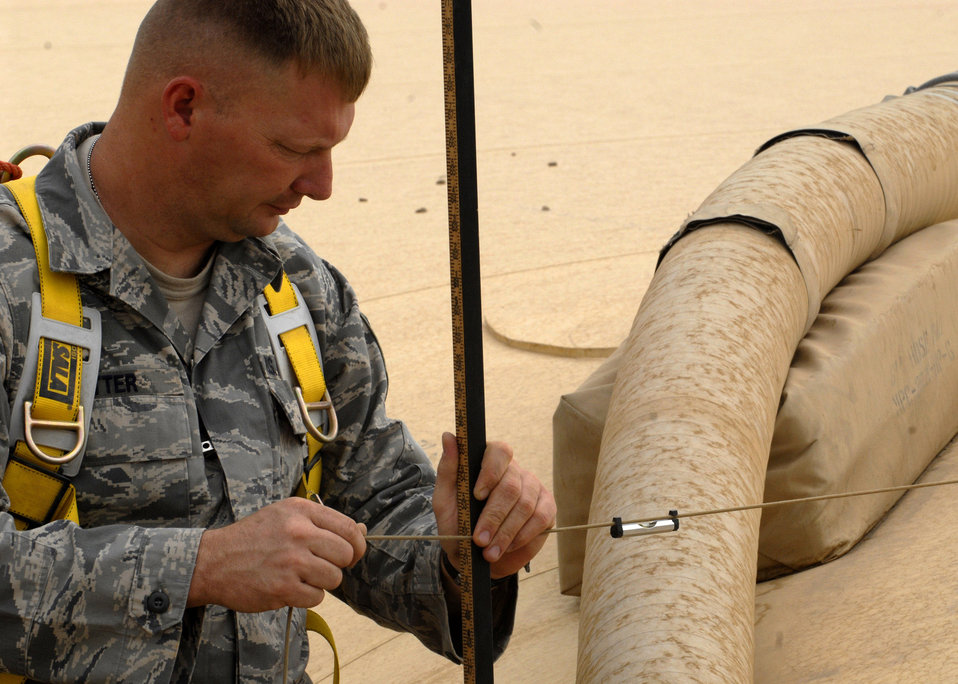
Fuel gauge

Tech. Sgt. Joseph Ritter measures the amount of fuel in a storage cell to monitor the fuel inventory Oct. 17 at Balad Air Base, Iraq. Sergeant Ritter is assigned to the 332nd Expeditionary Logistics Readiness Squadron. He is deployed from Little Rock Air Force Base, Ark., where he is a member of the 314th Logistics Readiness Squadron.